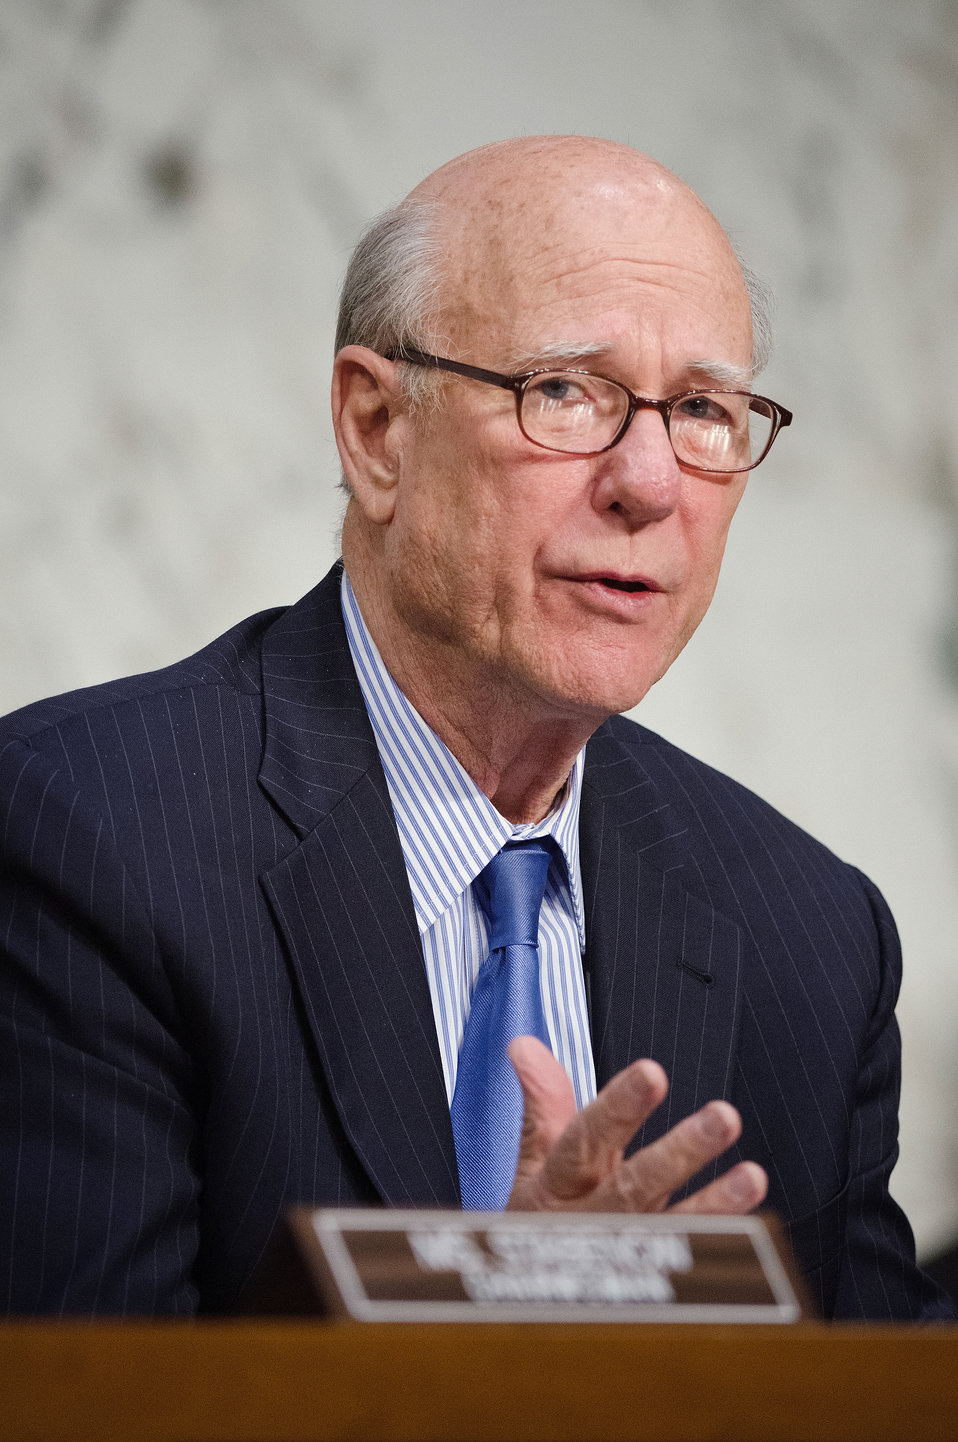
Senator Pat Roberts (KS) poses a question to Agriculture Secretary Tom Vilsack during Secretary Vilsack’s testimony on “Healthy Food Initiatives, Local Production and Nutrition,” before the Senate Agriculture Committee on Wednesday, March 7, 2012 in Washington, D.C.